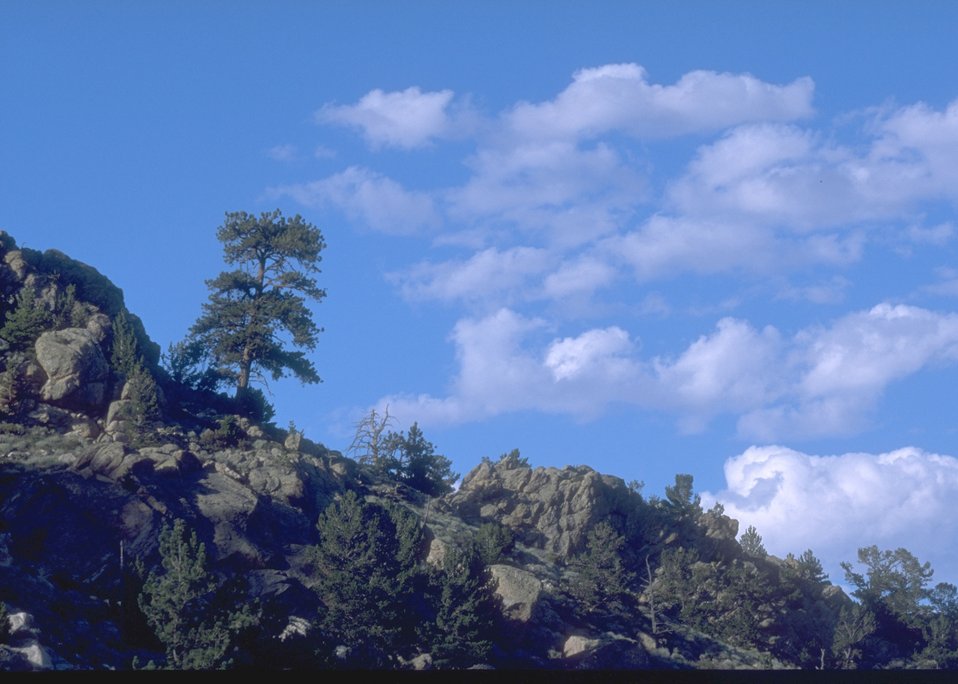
Landscape along the Alcova/Seminoe Back Country Byway, Rawlins Field Office.